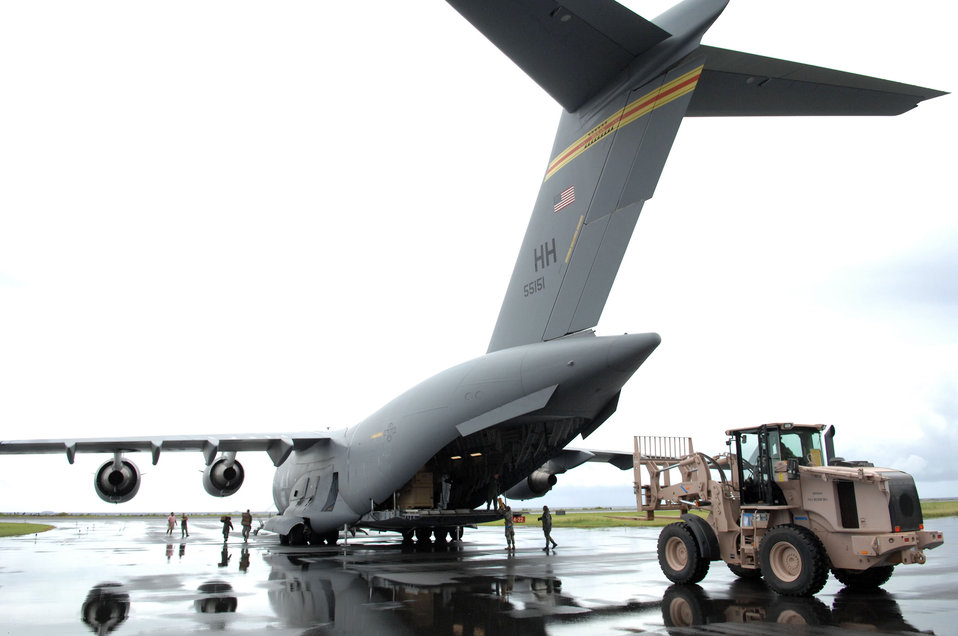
Air Force humanitarian team arrives on Chuuk

Airmen unload a C-17 Globemaster III from the 15th Airlift Wing at Hickam Air Force Base, Hawaii, during the Humanitarian Assistance Rapid Response Team validation exercise Sept. 2, 2009 on Chuuk in the Federated States of Micronesia. The HARRT is the Air Force's new expeditionary medical capability designed to deploy within 24 hours of notice during disaster relief operations. The team can set up a fully-operational medical clinic within six hours after landing and treat 350 to 500 patients per day.